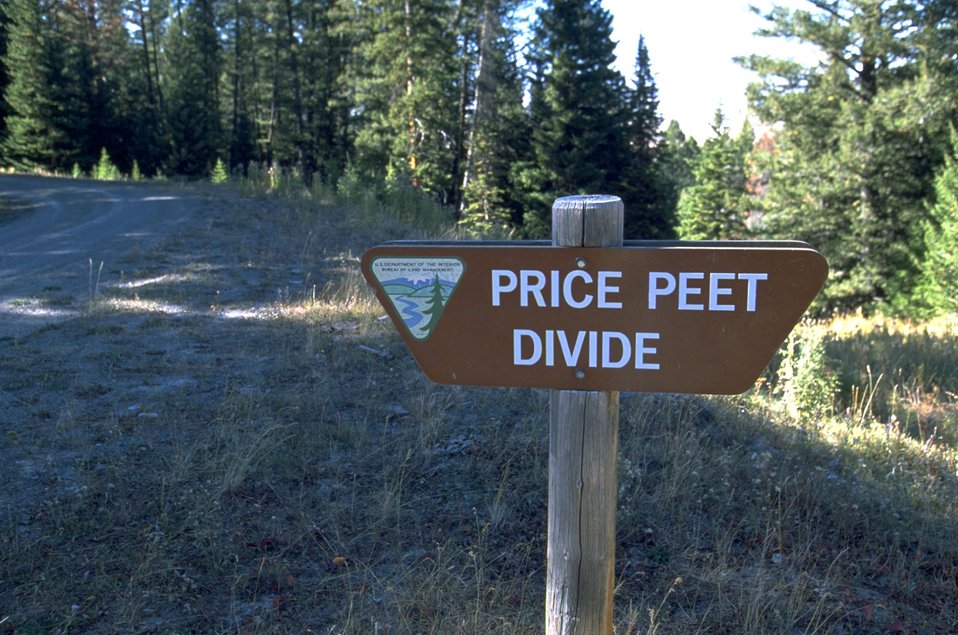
Price Peet Divide sign